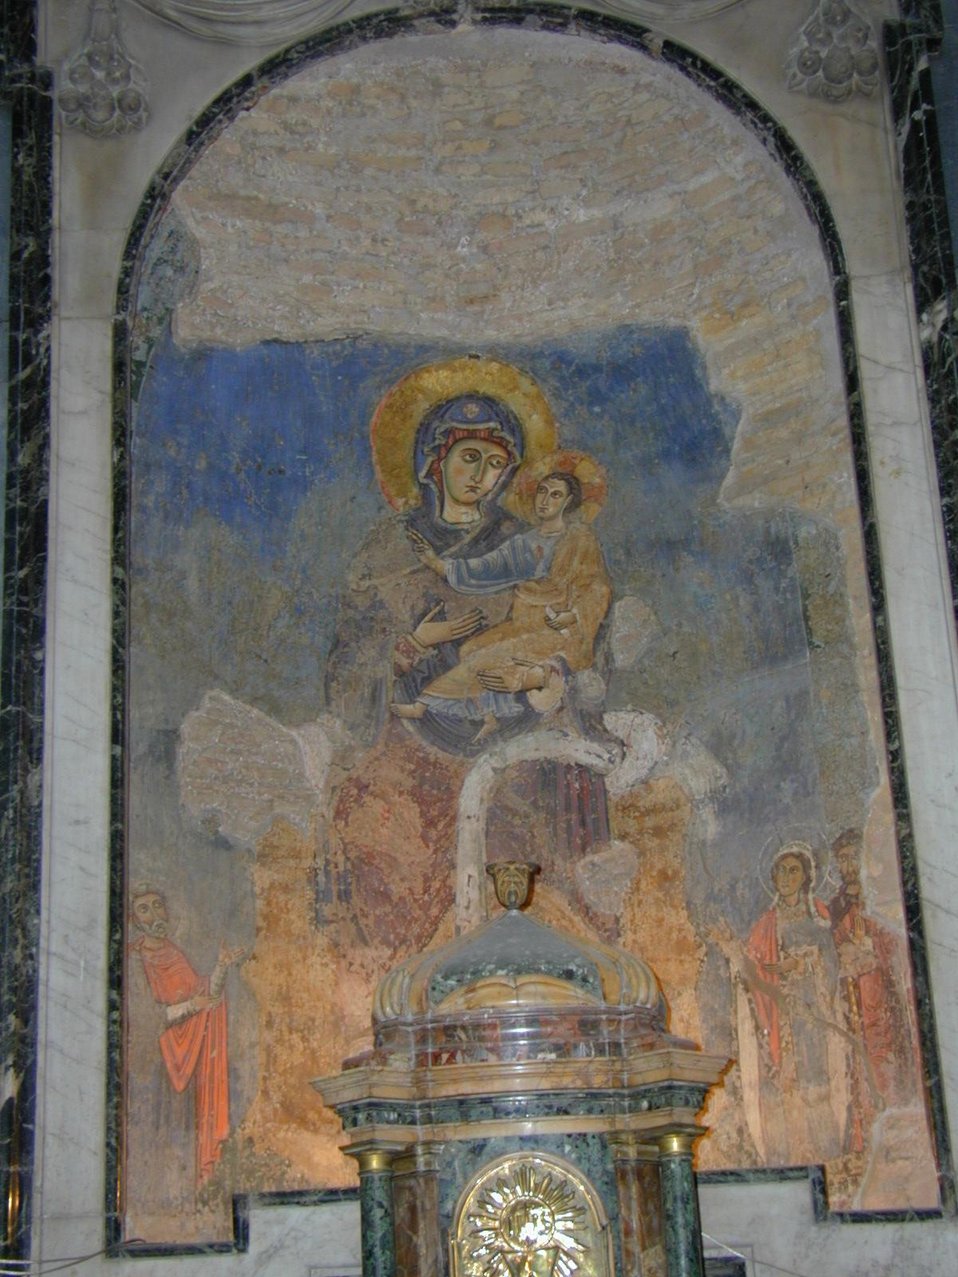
000205 12 isola tiberina - madonna di san bartolomeo